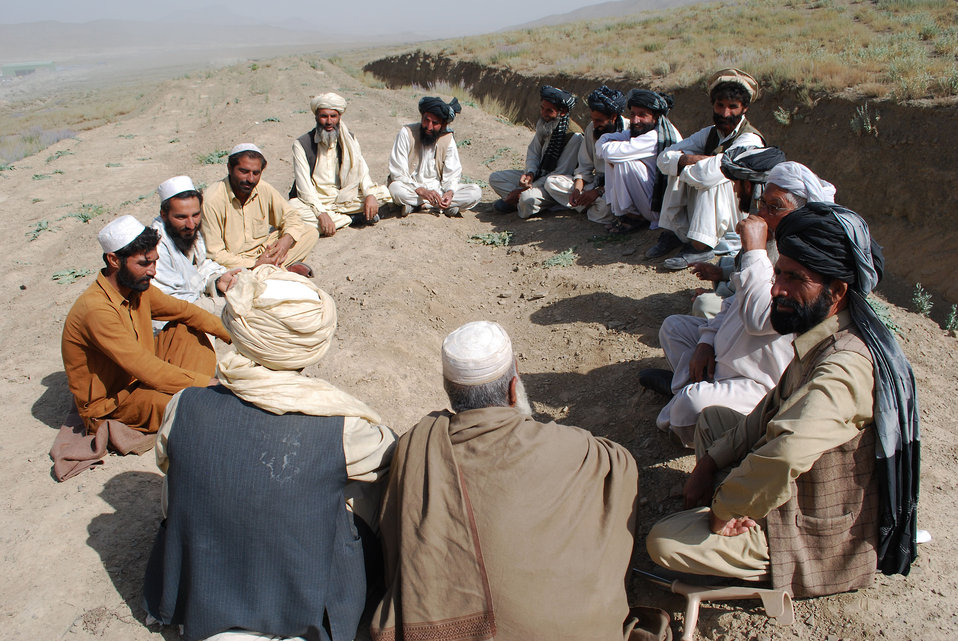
'On the Road' in Paktya Province